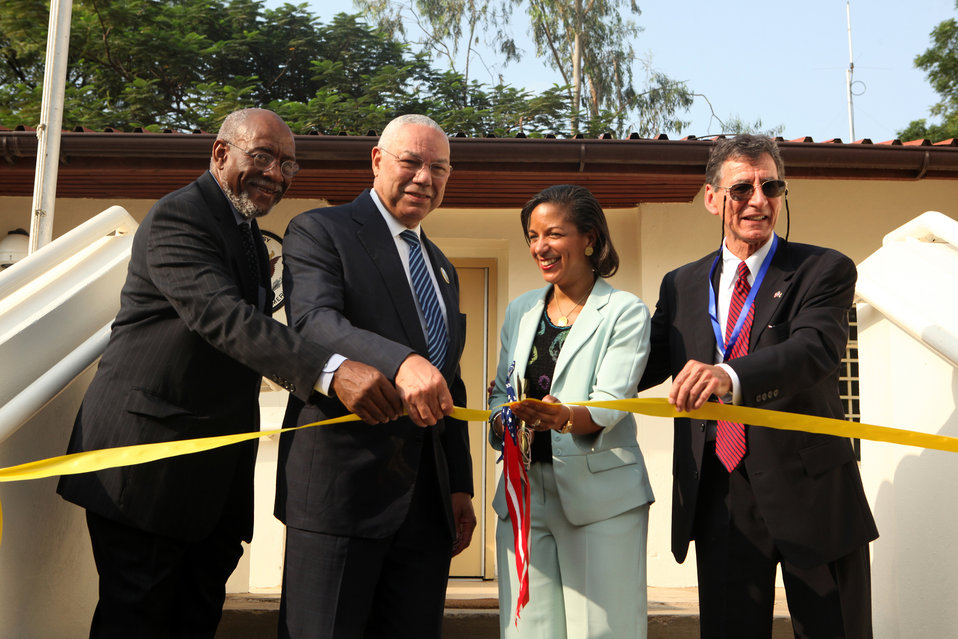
South Sudan Independence Day

Honorable Johnnie Carson, Assistant Secretary of State for African Affairs, Department of State; Ret. General Colin Powell, former Secretary of State for the United States; Ambassador Susan E. Rice, U.S. Permanent Representative to the United Nations; and Ambassador R. Barrie Walkley inaugurate the new U.S. Embassy in Juba, South Sudan on July 9, 2011.